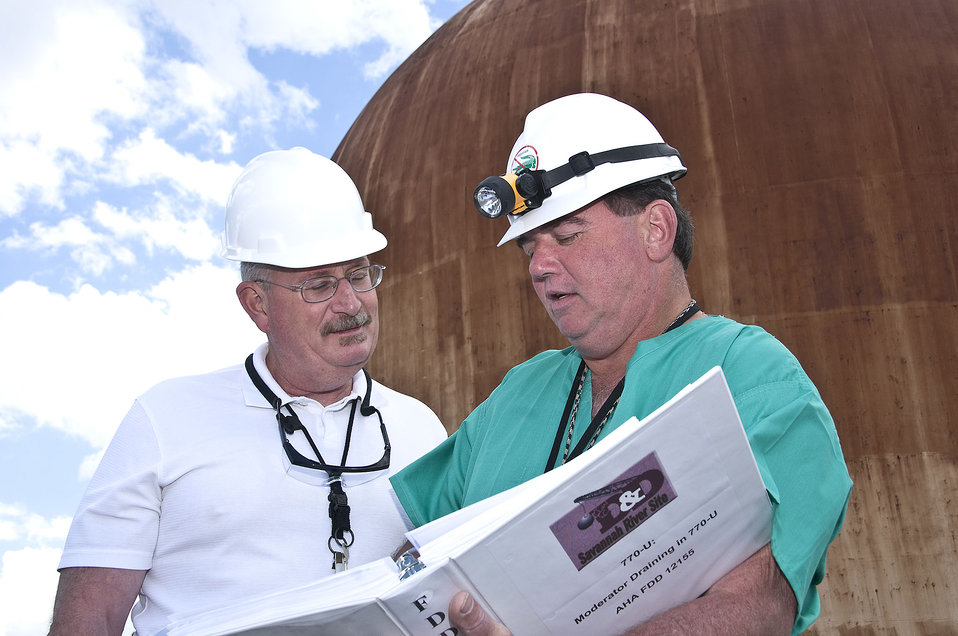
Work at Savannah River Site